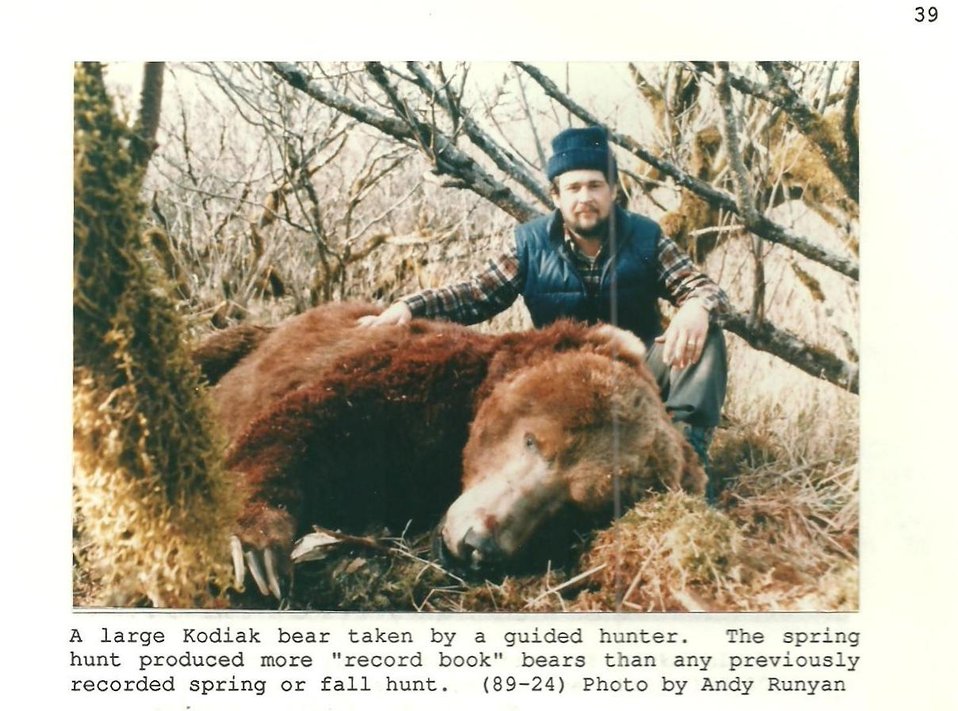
(1989) Big Bear

Credit: USFWS

Source and Contact: Kodiak National Wildlife Refuge